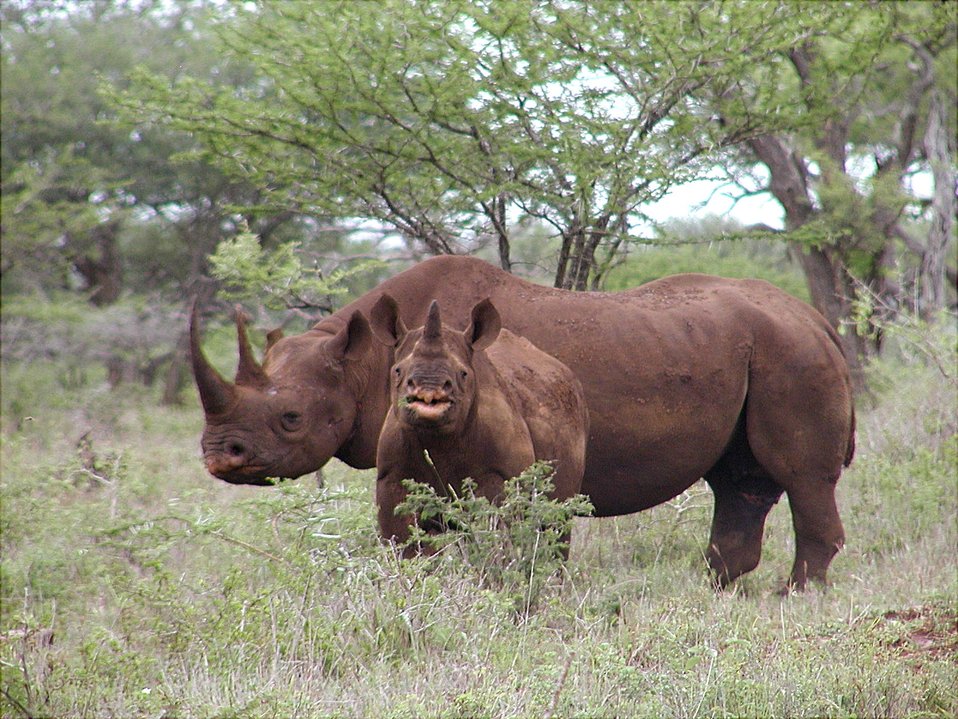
Black rhino male and calf

Mkhuze, South Africa